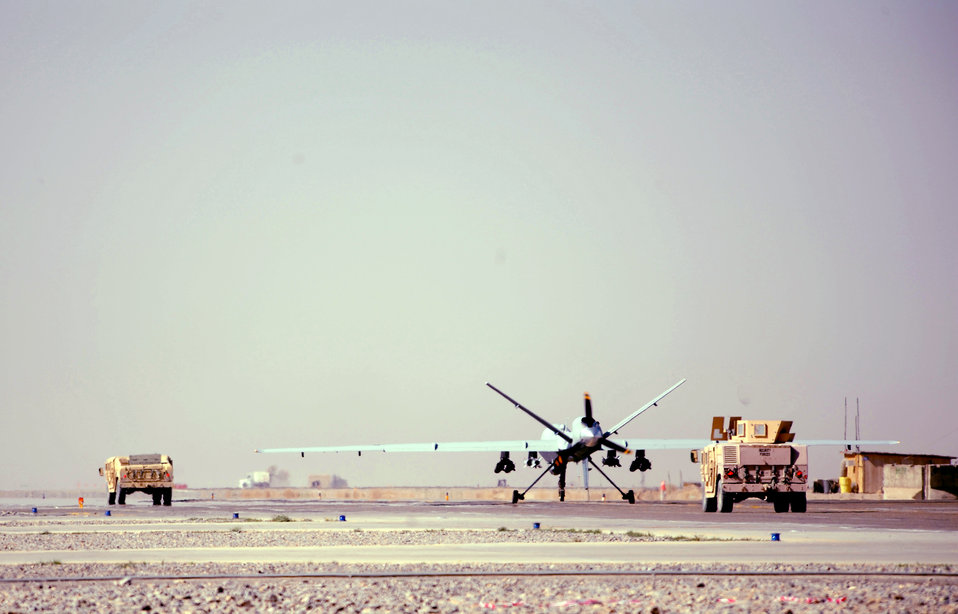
UAs not drones

An Air Force MQ-9 Reaper from the 62nd Expeditionary Reconnaissance Squadron taxis for take off March 13 at Kandahar Air Base, Afghanistan, for a mission in support of Operation Enduring Freedom.